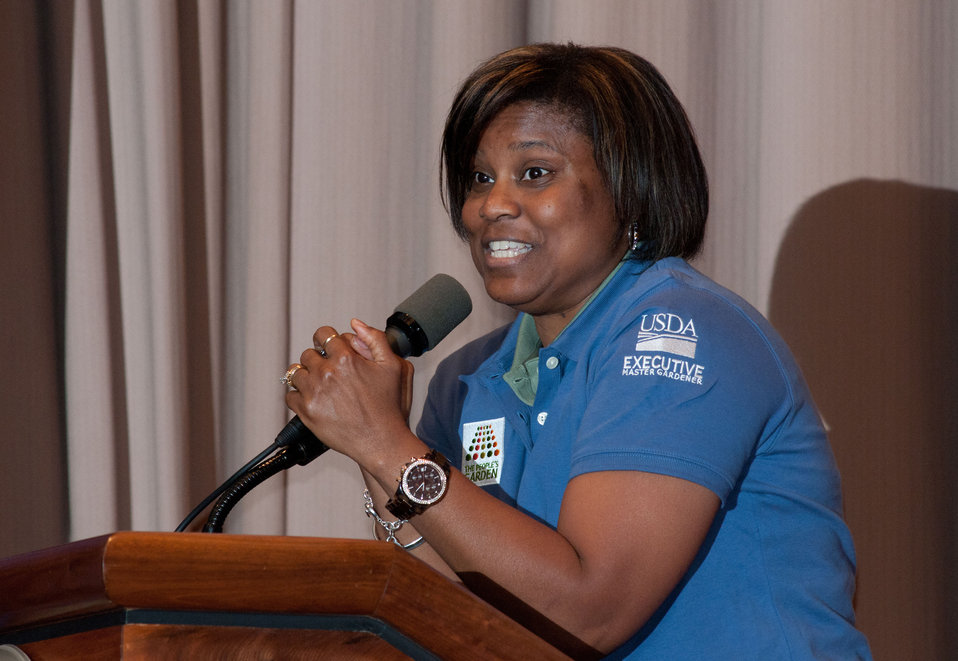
Graduation day of the 2011 U.S. Department of Agriculture (USDA) Executive Master Gardeners, on Tuesday, November 8, 2011 in Washington, DC. During the past six-weeks, students contributed 40-hours of volunteer time, completed studies and testing to receive their certificates today as an Executive Master Gardener. Many of the sessions occurred before work hours, during lunchtime or at community garden project sites such as Powell Middle School. USDA challenges its employees to establish People's Gardens at USDA facilities worldwide or in community gardens. People's Gardens vary in size and type, but all have a common purpose - to help the community and the environment. To learn about the People’s Garden Initiative visit www.usda.gov/wps/portal/usda/usdahome?contentid=peoples g....